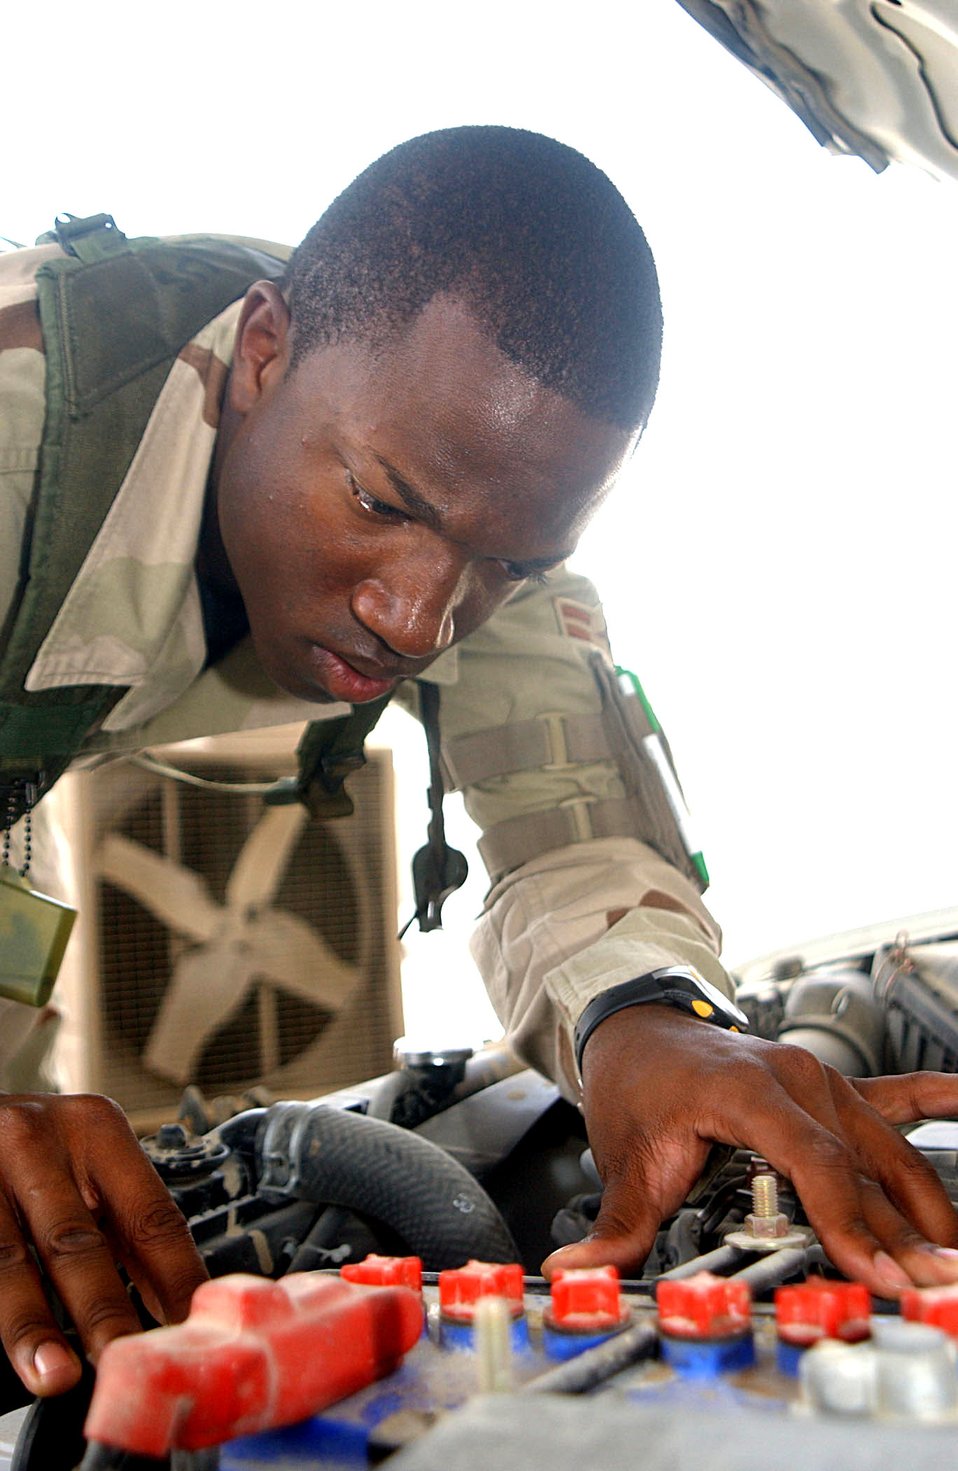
Checkin' things out

SOUTHWEST ASIA (AFPN) -- Airman 1st Class Marcus Thompson inspects the engine compartment of a vehicle entering this forward-deployed location. All vehicles entering the base are inspected by 380th Expeditionary Security Forces Airmen. Airman Thompson is deployed from Eglin Air Force Base, Fla.